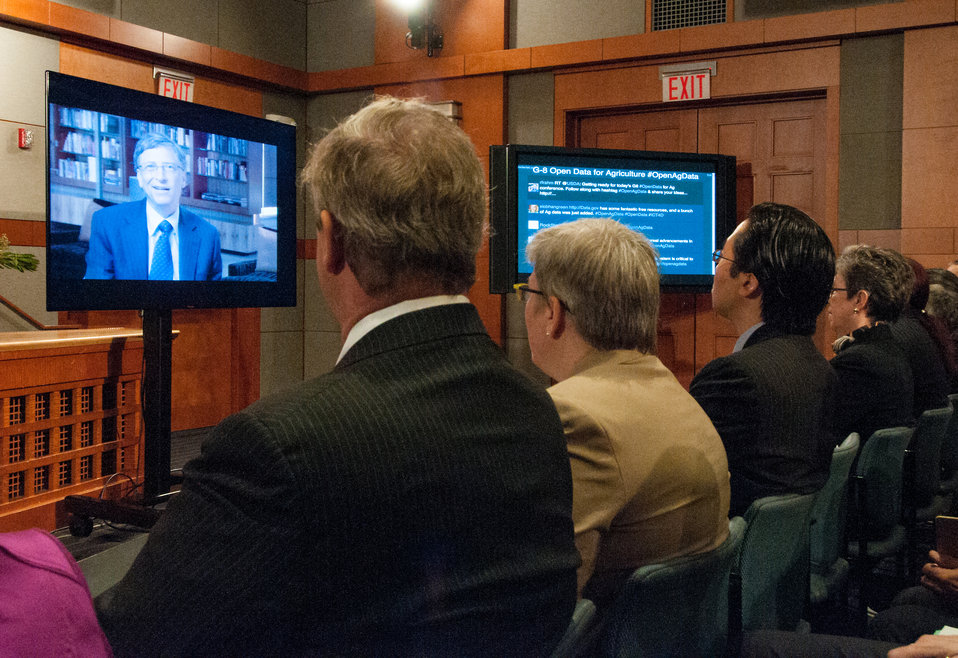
(L to R) Agriculture Secretary Tom Vilsack, World Bank Vice President Dr. Rachel Kyte, White House Chief Technology Officer Todd Park and Agriculture Under Secretary for Research, Education, and Economics (REE) Dr. Catherine Woteki watch a video message by Gates Foundation President Bill Gates at the opening session of the G-8 International Conference on Open Data for Agriculture in Washington, D.C. on Monday, Apr. 29, 2013. The conference launched a new 'virtual community' as part of a suite of actions, including the release of new data, that the U.S. is taking to give farmers and ranchers, scientists, policy makers and other members of the public easy access to publicly funded data to help increase food security and nutrition.